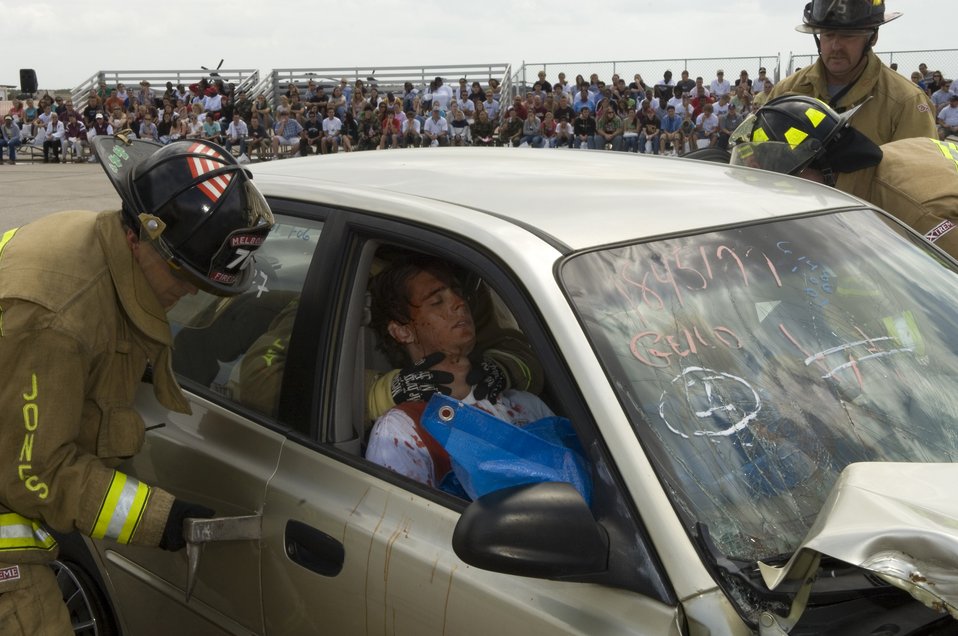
'Not on Our Watch'

High school seniors watch as a rescue team from Brevard County, Fla., prepares an